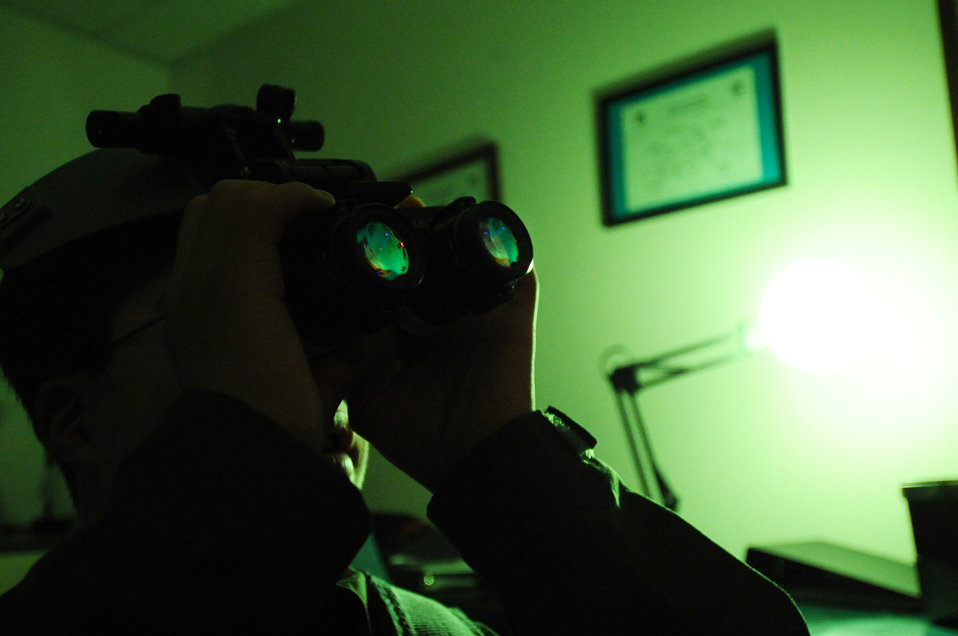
Eielson Airmen turn child into pilot for a day

Alex Lee looks through night-vision goggles Aug. 22 at Eielson Air Force Base, Alaska. Alex was born with congenital heart defects and Down syndrome and was selected by the Make-A-Wish Foundation for the Pilot for a Day program. The purpose of the program is to ease the pain of children who lost a normal childhood due to illnesses or disabilities.